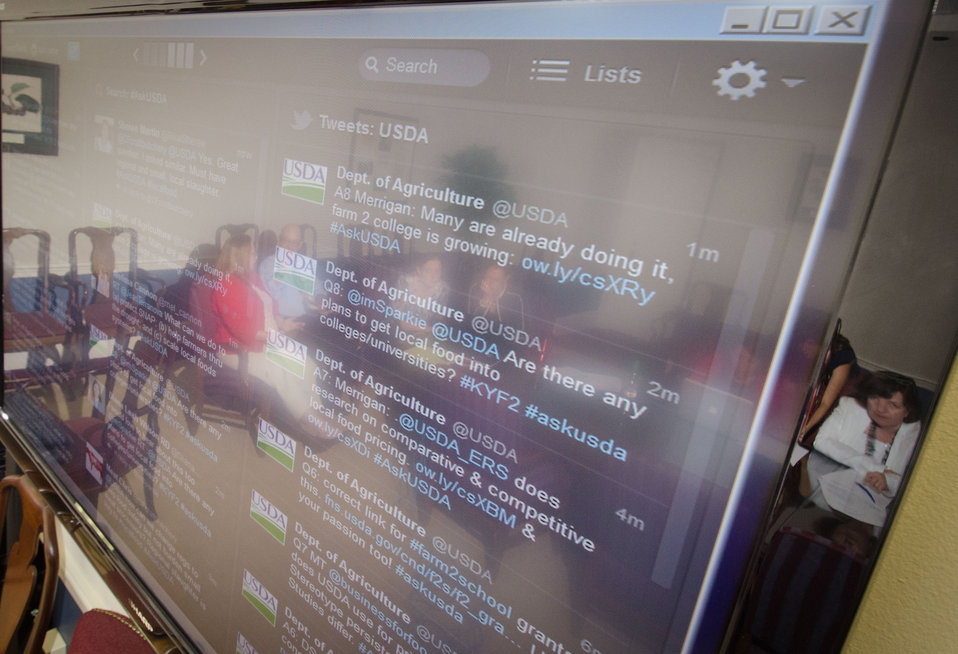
Agriculture Deputy Secretary Kathleen Merrigan, right, and a communications team checks that there is a useful answer for every question, some having two parts to an answer, during the live Twitter chat focused on the Department’s support of local and regional food systems and the recent release of the 2.0 version of the Know Your Farmer, Know Your Food Compass on Tuesday, July 24, 2012, in Washington, D.C. Deputy Secretary Merrigan utilized her staff and other subject matter experts to point folks to good information, during the #ASKUSDA Virtual Office Hours on Local Food.